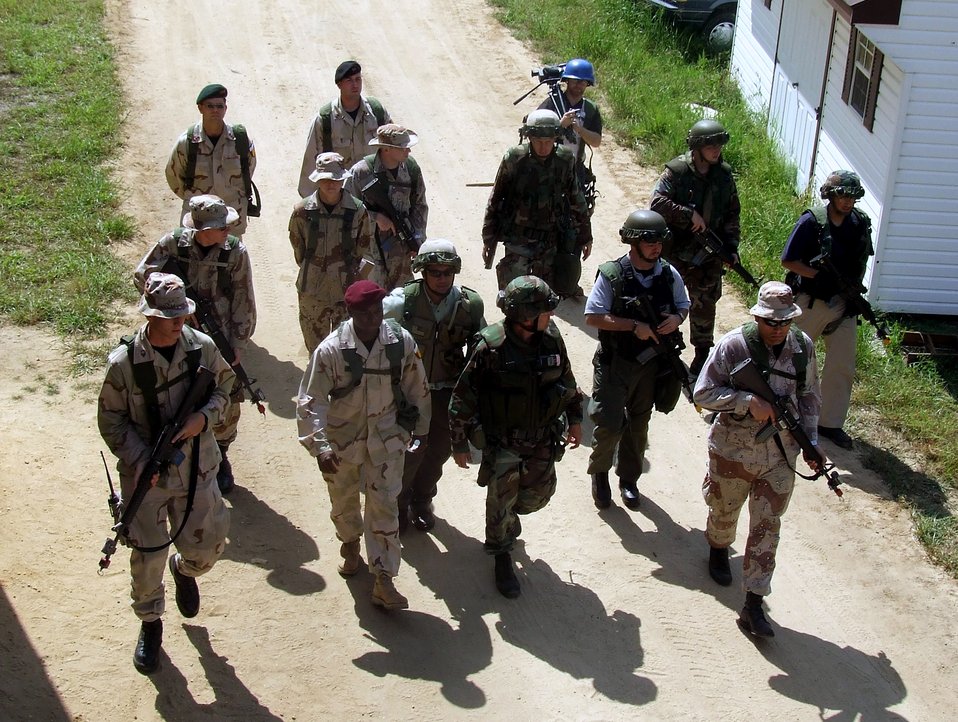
Eagle Flag tests combat support skills

Students and role players hold a scenario in the fictional village of Citheron for Air Force Exercise Eagle Flag 07-6 Aug. 27 at Naval Air Engineering Station Lakehurst, N.J. The exercise is operated by the Air Force Expeditionary Center's 421st Combat Training Squadron from Fort Dix, N.J.